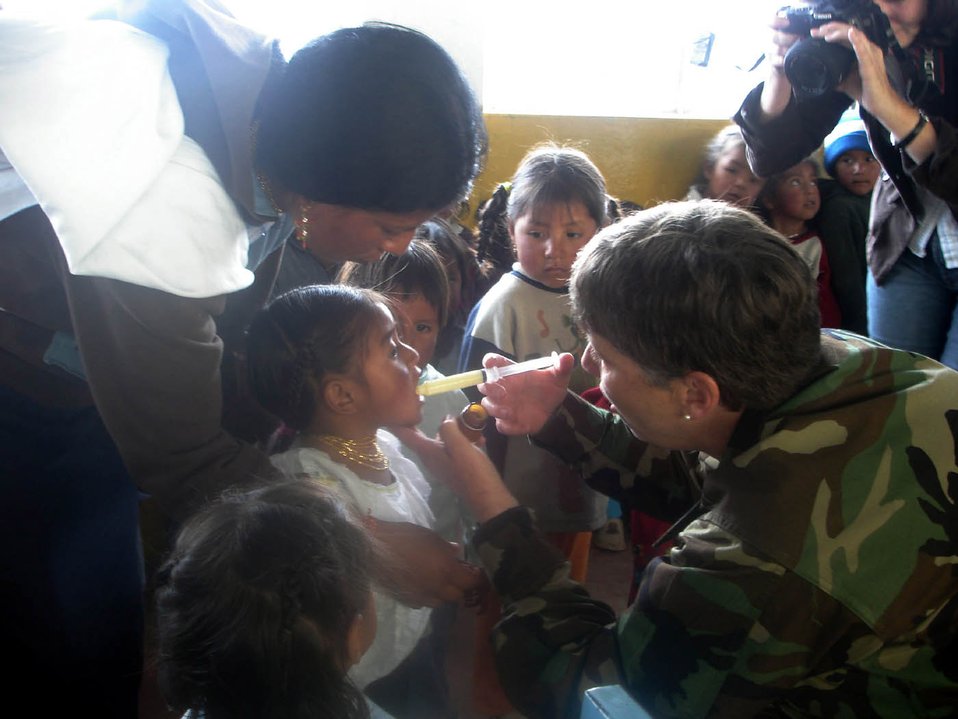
Air Force medics in Ecuador

OTAVALO, Ecuador (AFPN) -- Lt. Col. (Dr.) Karen Kinne gives a child anti-parasitic medicine with help from the girl's mother. The anti-parasitic medicine treats gastrointestinal infections that are prevalent in the region. Colonel Kinne is the medical readiness exercise commander for the Air Force team here, and is assigned to the 21st Medical Group at Peterson Air Force Base, Colo.